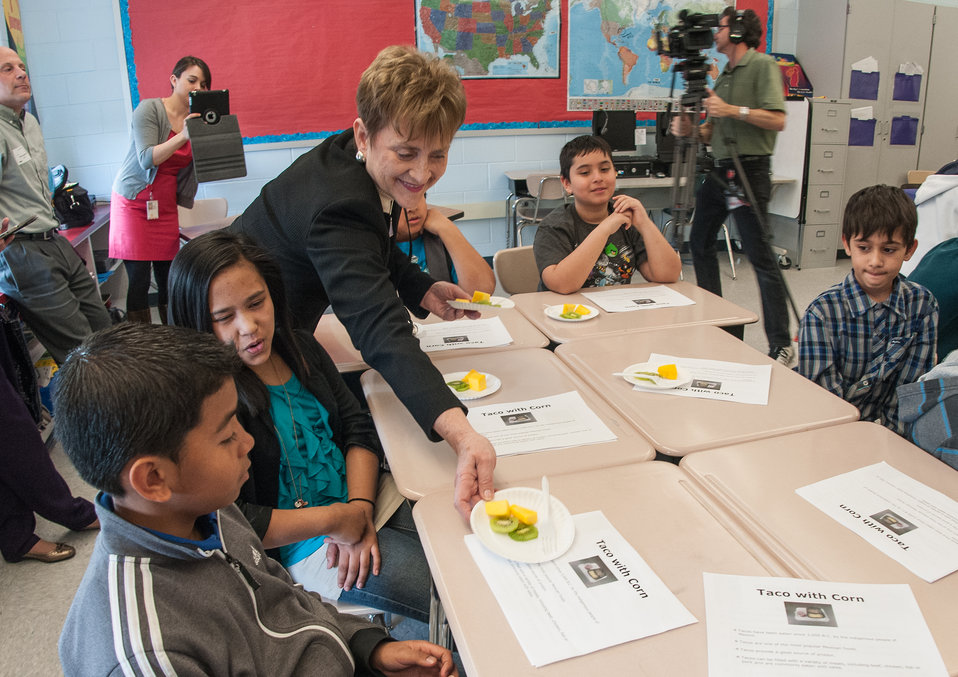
Department of Agriculture (USDA) Food, Nutrition and Consumer Services (FNS) Deputy Under Secretary Dr. Janey Thornton helps serve mango and kiwi to students participating in the inaugural International School Meals Day at Harmony Hills Elementary School in Silver Spring, MD, on Friday, March 8, 2013. Mr. Damien Grasso's 5th grade class was paired with Mrs. Karen McAllister’s class at Dalry Primary School in North Ayrshire, United Kingdom using a real-time online video connection; the children are able to share some of the healthy eating and physical activity choices available to them. “This event helps underscore the importance of the HealthierUS School Challenge and some of the ways that children and communities can become involved with promoting nutrition,” said Dr. Thornton. “USDA believes that schools can take a leadership role in combating childhood obesity by incorporating healthier menus and introducing more physical activities during the school day. The strong foundation these schools have built supports a clear path for our nation's young people to win the future.' USDA's Food and Nutrition Service administers several programs that provide healthy food to children including the National School Lunch Program, the School Breakfast Program, the Child and Adult Care Food Program, the Summer Food Service Program, the Fresh Fruit and Vegetable Program, and the Special Milk Program. Administered by State agencies, each of these programs helps fight hunger and obesity by reimbursing organizations such as schools, child care centers, and after-school programs for providing healthy meals to children. Learn more by visiting www.fns.usda.gov and twitter @USDANutrition.